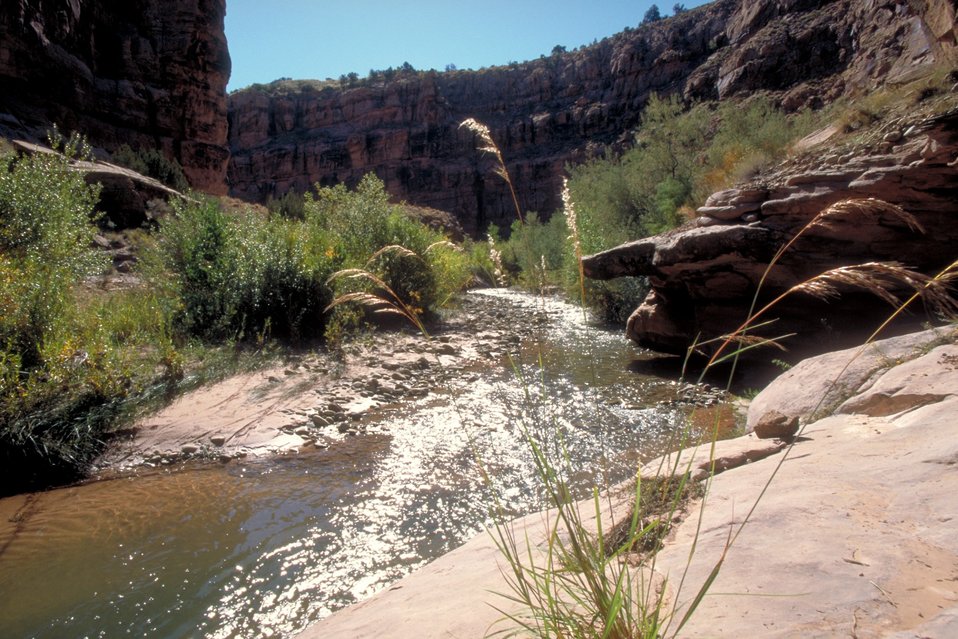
South Fork of Mill Creek near Moab, Utah.